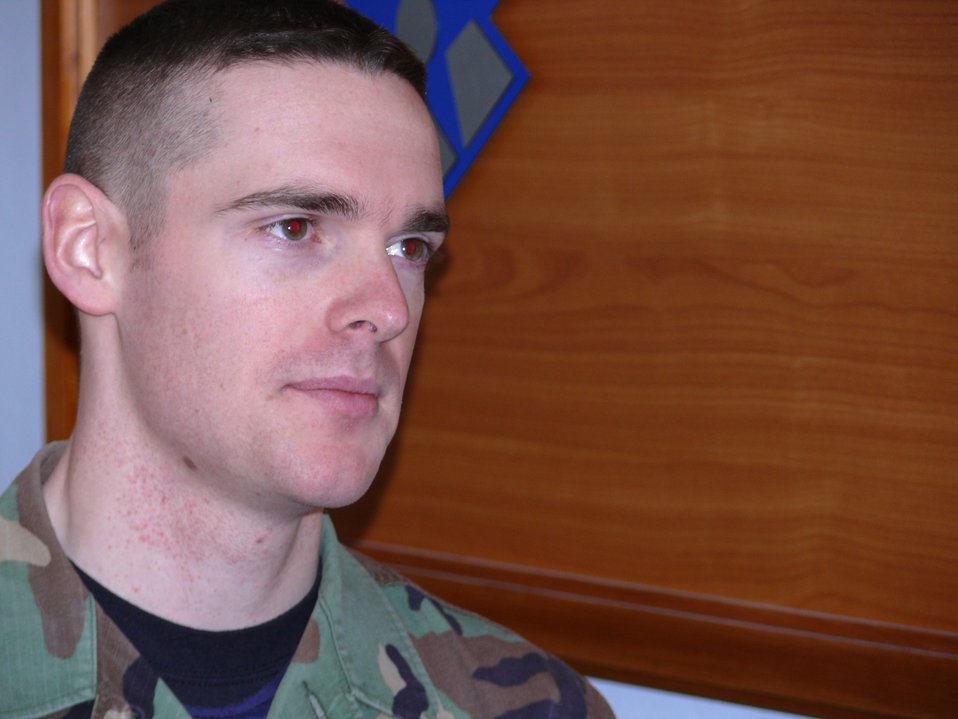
Serving through the season: Staff Sgt. Joey Crowell

As a security forces patrolman, Staff Sgt. Joey Crowell works during the holidays so others can enjoy their time off. He's assigned to Ramstein Air Base, Germany, where he works as an area supervisor patrolling U.S. Air Forces in Europe headquarters.